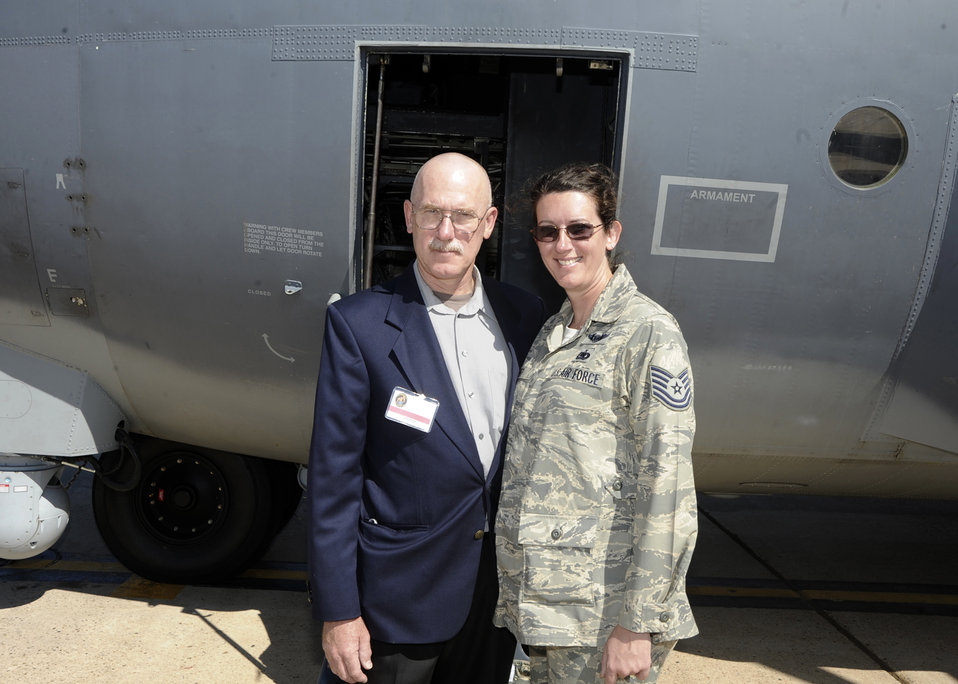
Father, daughter share C-130 heritage

Master Sgt. Jennifer Seibt, and her father, retired Coast Guard Chief Warrant Officer 3rd Class William Seibt, stand in front of an MC-130W Dragon Spear July 30, 2010, at Cannon Air Force Base, N.M. Mr. Seibt is a former avionics and navigator for C-130 aircraft, while Sergeant Seibt has been a loadmaster for the venerable airframe for seven years. Sergeant Seibt is assigned to the 73rd Special Operations Squadron.